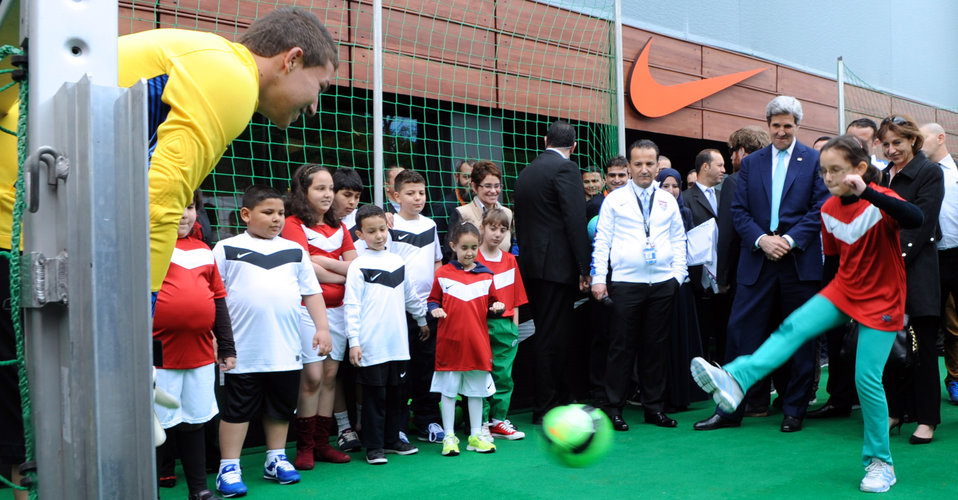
Young Algerian Demonstrates Soccer Skills for Secretary Kerry

A young Algerian girl takes a shot on a professional soccer goalie after U.S. Secretary of State John Kerry spoke about the value of sports in life and State Department Sports Diplomacy programs during a visit to a shoemaker's flagship store in Algiers - the largest in the African continent - on April 3, 2014.